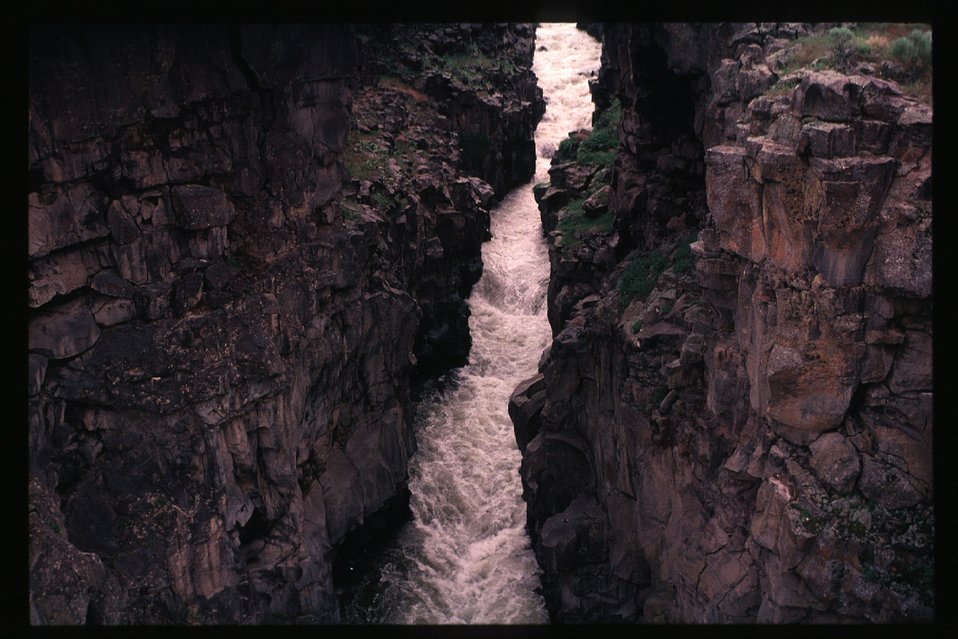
Water falls Rapids Recreation Scenic Snake River Jarbidge Field Office LSRD Lower Snake River District